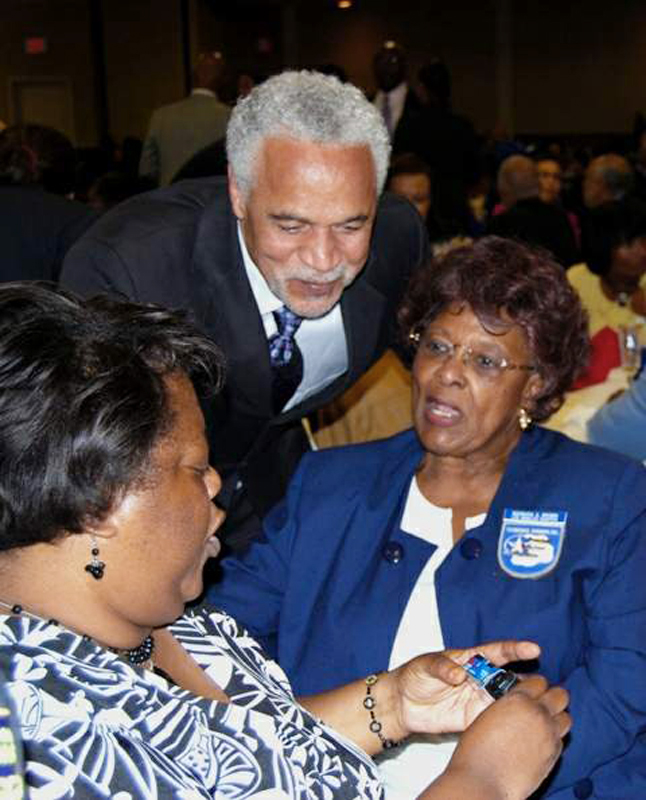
Historic promotion evokes reflection, bridges generations

Stage and screen actor Ron Glass chats with chapter members at Brig. Gen. Stayce D. Harris's promotion during the 38th Annual Tuskegee Airmen, Inc., convention Aug. 7 in Las Vegas.